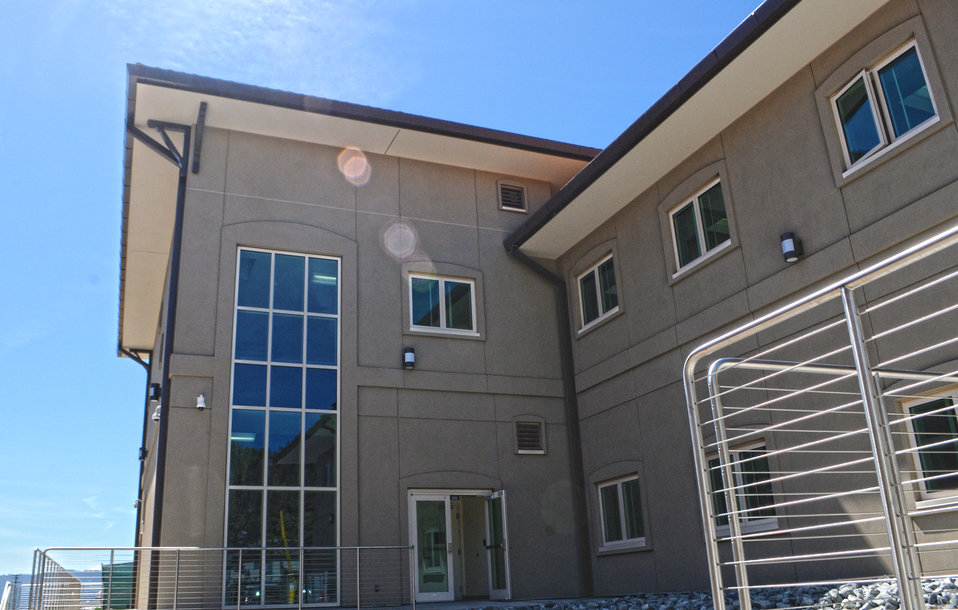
New general instruction building at Presidio of Monterey

A side view of the new general instruction building at the Presidio of Monterey in Monterey, Calif., shown April 19, 2012. The U.S. Army Corps of Engineers Sacramento District oversaw construction of the building, used by the Defense Language Institute to teach military personnel foreign languages.